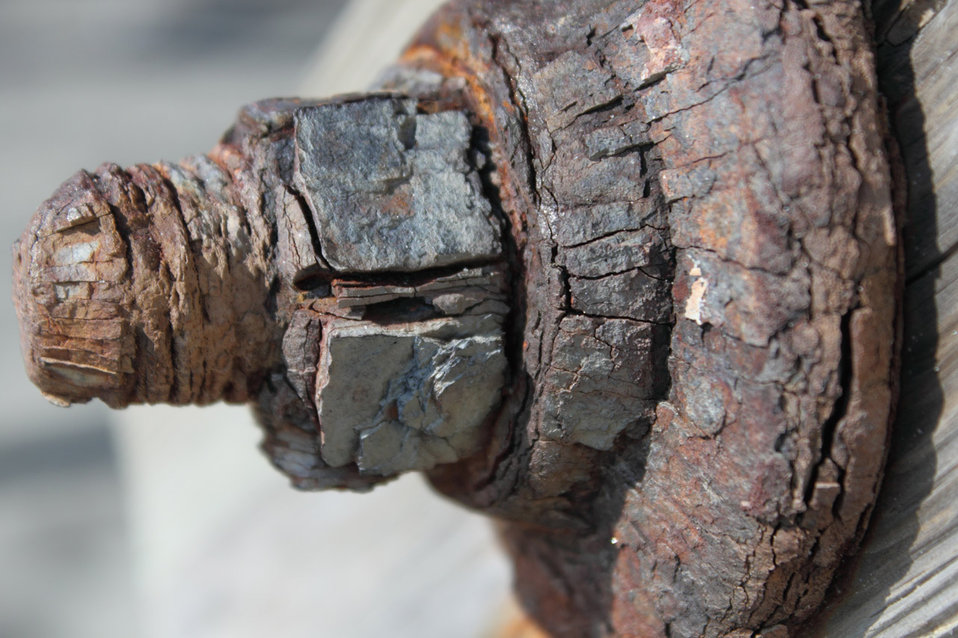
Rusty pier bolt

A bolt that helps keep the folly beach pier together.